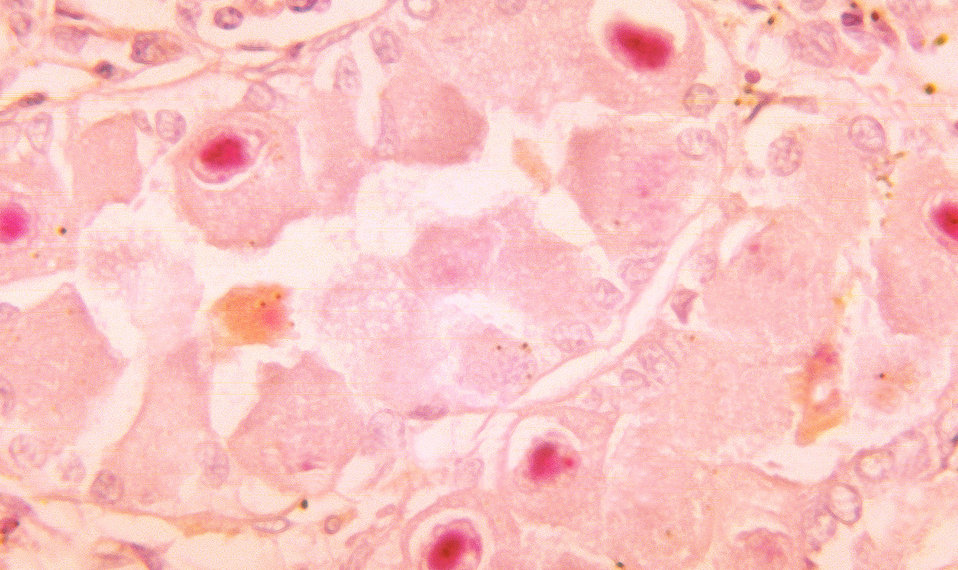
Histopathology of cytomegalovirus infection of kidney tubule epithelial cells. Lendrum stain.